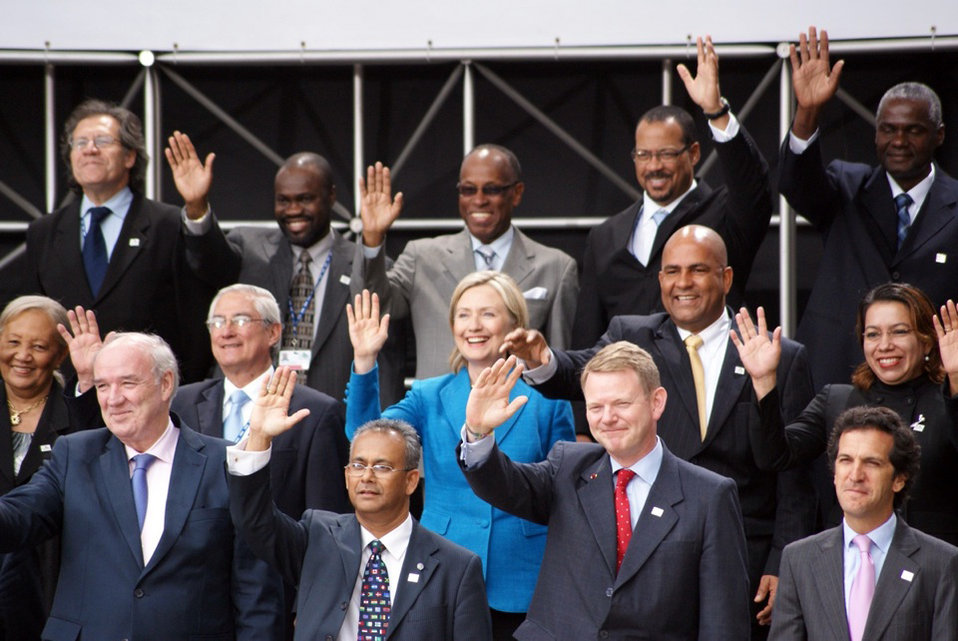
Secretary Clinton Attends 40th OAS Assembly Official Ministerial

U.S. Secretary of State Hillary Rodham Clinton poses with leaders during the 40th OAS Assembly Official Ministerial Photo in Lima, Peru June 7, 2010.